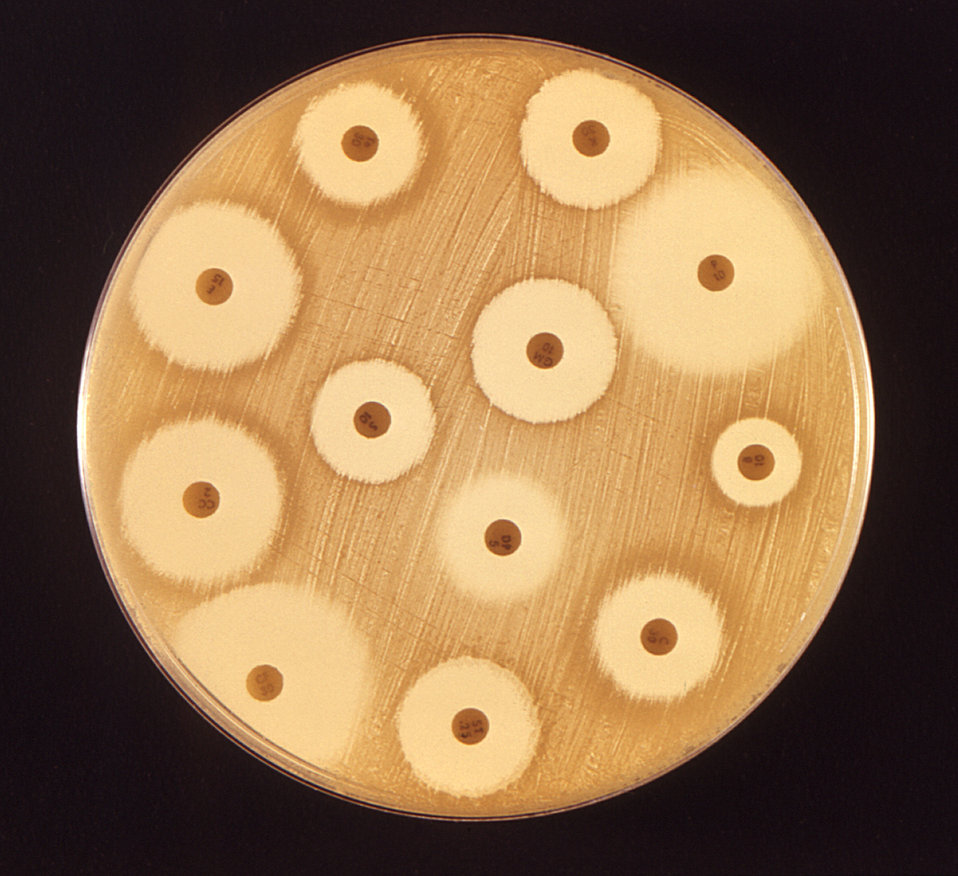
This 1972 image depicted a Mueller-Hinton agar culture plate that had been used in an antibiotic susceptibility test (AST). Known as the Kirby-Bauer method, each of the small labeled discs, or wafers, contained an antibiotic cocktail. The light halos surrounding each disc, also known as 'reaction zones', represented regions in which the bacteria on the agar's surface did not thrive, due to their sensitivity to the antibiotic that had been soaked into these respective discs. See PHIL 10788 for an enlargement of a region of this photograph.